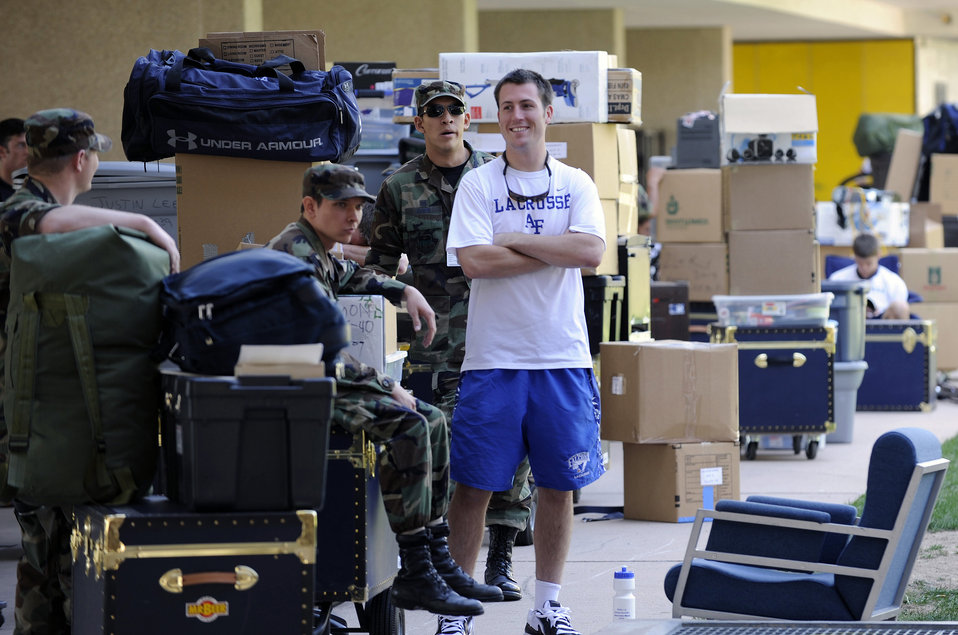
Move out!

At the Air Force Academy in Colorado, members of the graduating class of 2009 relax in the shade of Sijan Hall as their belongings are packed for shipment to their new duty stations. With only six days until graduation, many preparations must be done before commissioning and entering active duty.